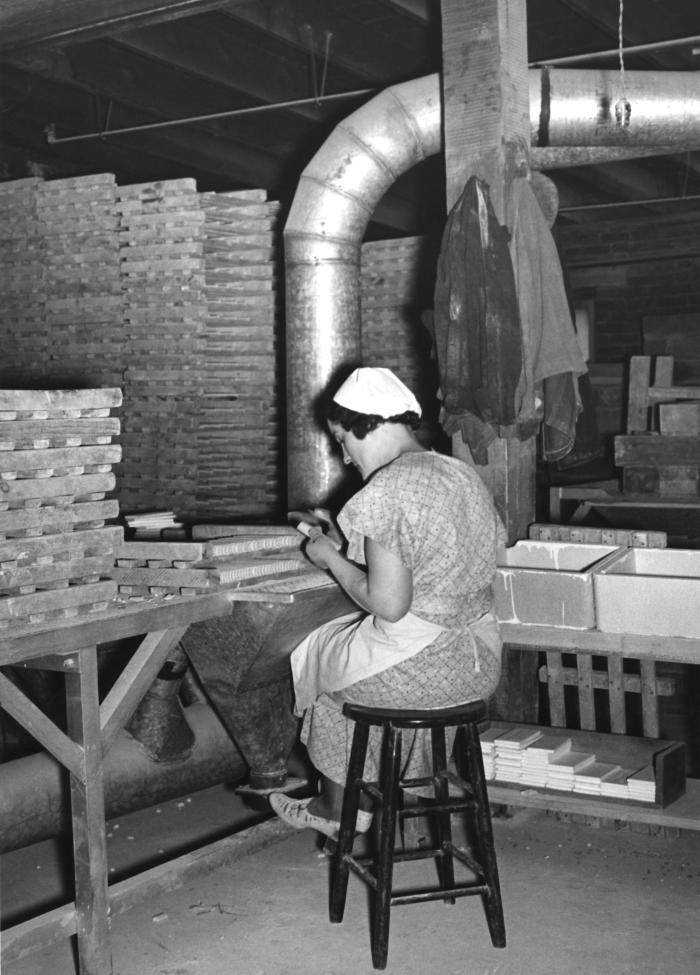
Provided by the Center for Disease Control's (CDC), National Institute for Occupational Safety and Health (NIOSH), this historic image depicted a female industrial worker who was inside a West Virginia tile-making factory at her tile-fettling workstation. Fettling involves the removal of debris, and roughened protuberances from the edges of newly cast ceramic tiles, by using sandpaper or a mechanical grinder. In so doing, these workers were prone to inhaling airborne silicate particulates, which lead to the chronic pulmonary disease known as pneumoconiosis, or silicosis, or more commonly known as 'grinders' disease', characterized by the formation of nodular fibrotic changes in the lungs. Note that this woman was not wearing a filtered breathing mask, increasing her chances of contracting silicosis. The image was published in the 'Public Health Bulletin', No. 244, 1939.